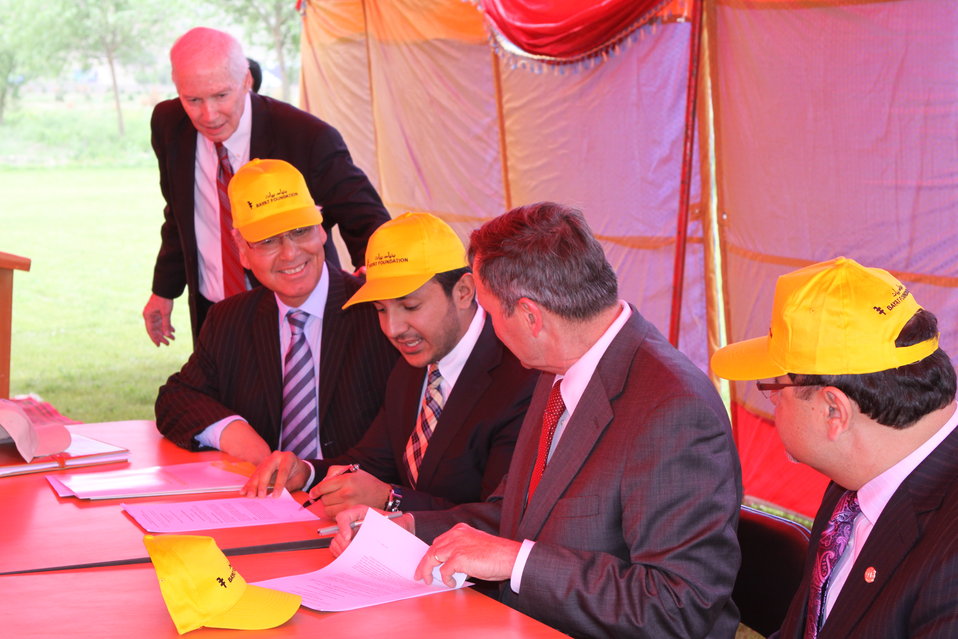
100526 AUAF Graduation 359